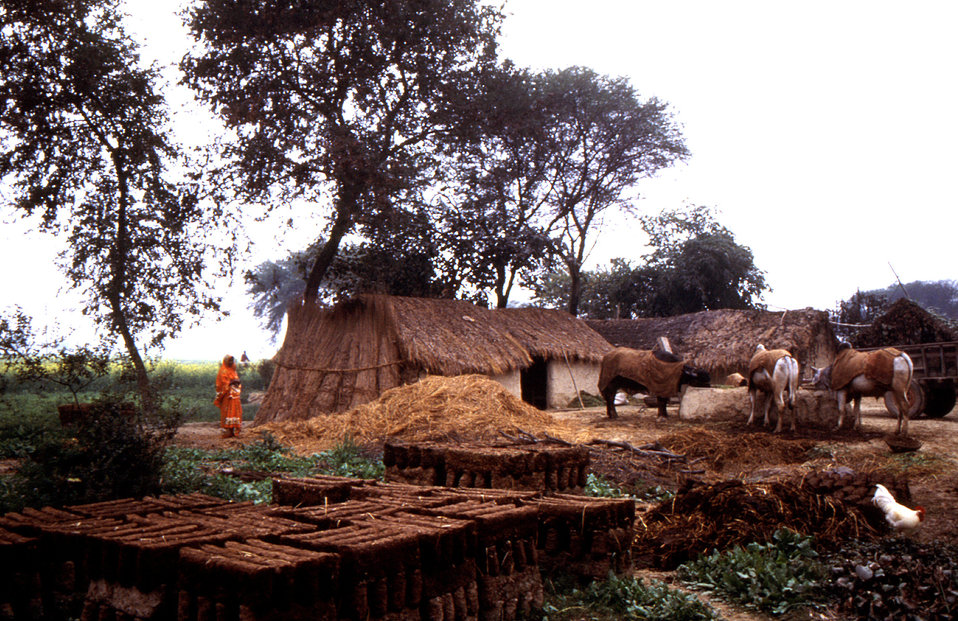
This image, captured in 2000, was provided by Chris Zahniser, B.S.N., R.N., M.P.H., a Stop Transmission of Polio (STOP) immunization initiative team member and photographer, and depicted the typical rural living conditions in the Uttar Pradesh region of India. Chris was assigned to the state of Uttar Pradesh in northern India, and spent three months working in the Districts of Gorakhpur and Deoria.